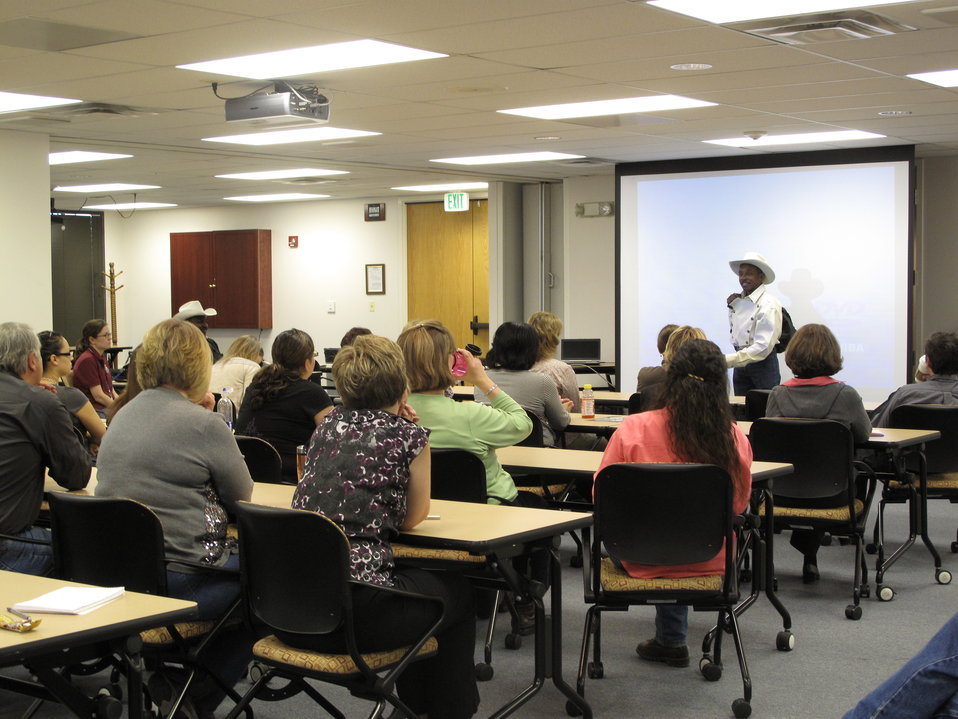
Charles Sampson speaks about his life story

Regional Office employees listen to Charles Sampson's story about his life as a rodeo cowboy.